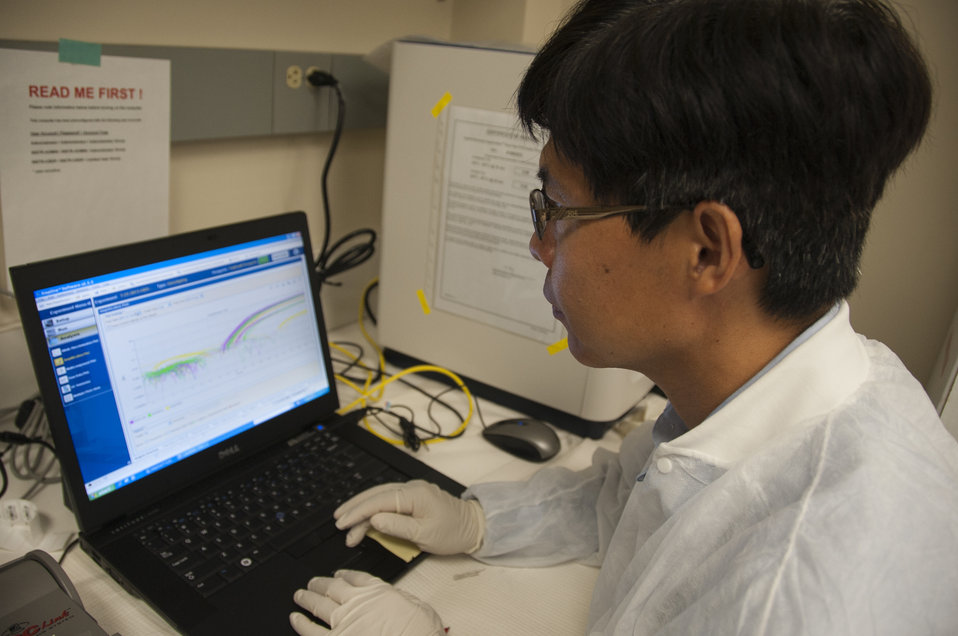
Blood Research: Saving Lives (8419)

Jason Liu, Ph.D., a laboratory chief at FDA’s Office of Blood Research and Review, analyzes the genetic characteristics of red blood cells in order to predict the specific blood type of the cells. This information is important for precise matching of donor and recipient blood. FDA is responsible for the safety of our nation’s blood supply and is at the forefront of evaluating and encouraging innovative technologies for protecting it.

Read this Consumer Update to learn more: Advances in Saving Lives with Blood